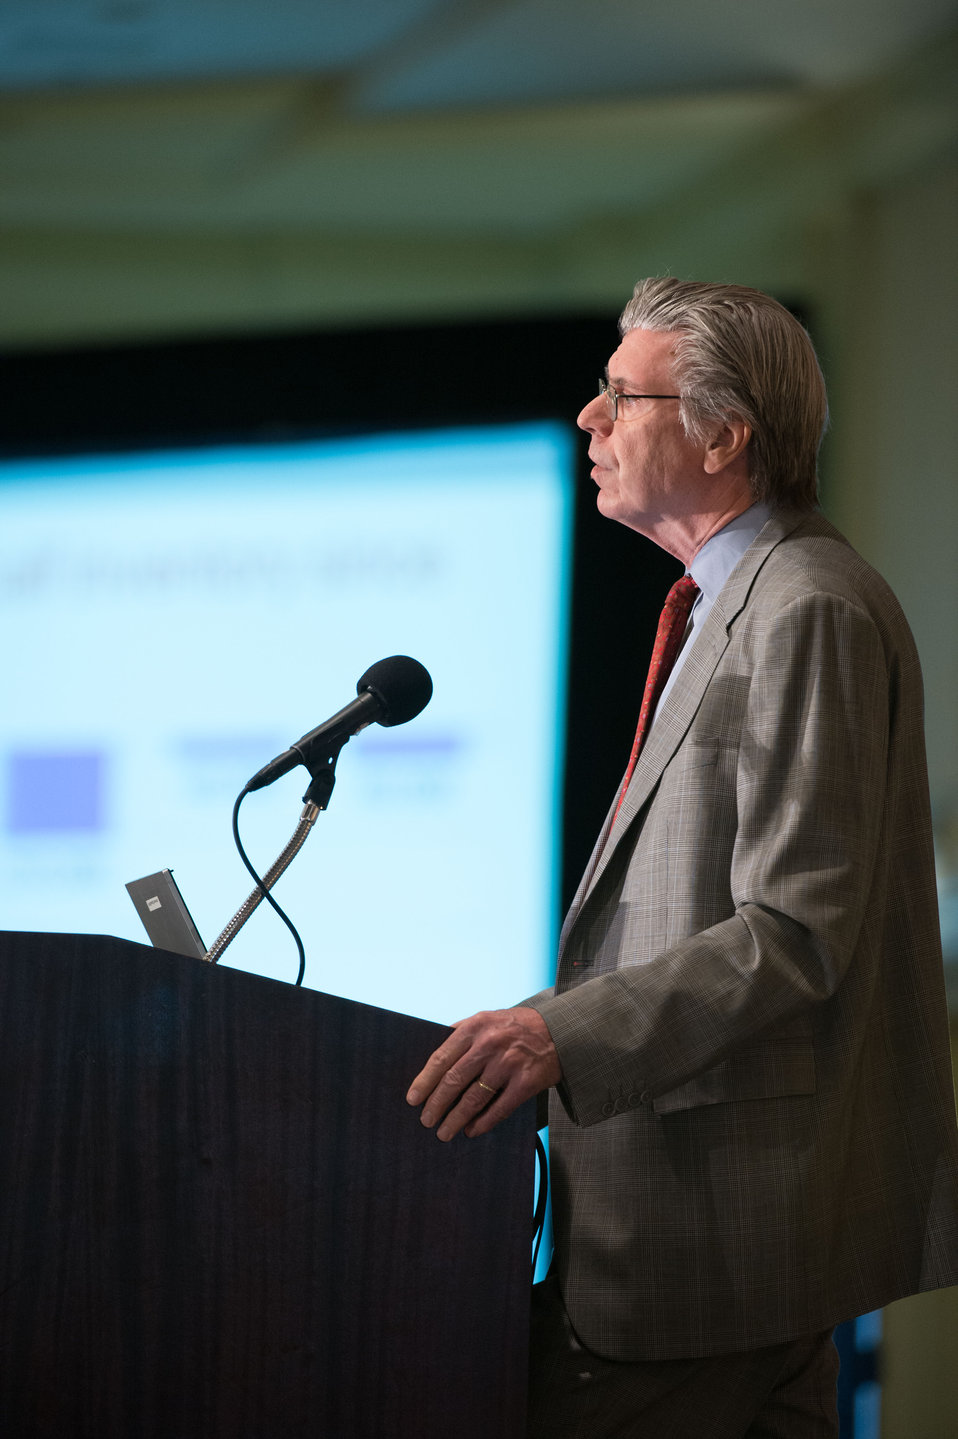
U.S. Department of Agriculture (USDA) Chief Economist Joseph Glauber gives a synopsis of U.S. Agriculture economy at the 2014 Agricultural Outlook Forum in Arlington, VA., on Thursday, Feb. 20, 2014. The U.S. Department of Agriculture's (USDA) annual Agricultural Outlook Forum brings together the agricultural community to discuss policy, trade, science, rural development, and the economic outlook for the coming year. The Forum also focuses on forestry, health and nutrition issues, and the changing dynamics and face of rural America.USDA photo by Bob Nichols.